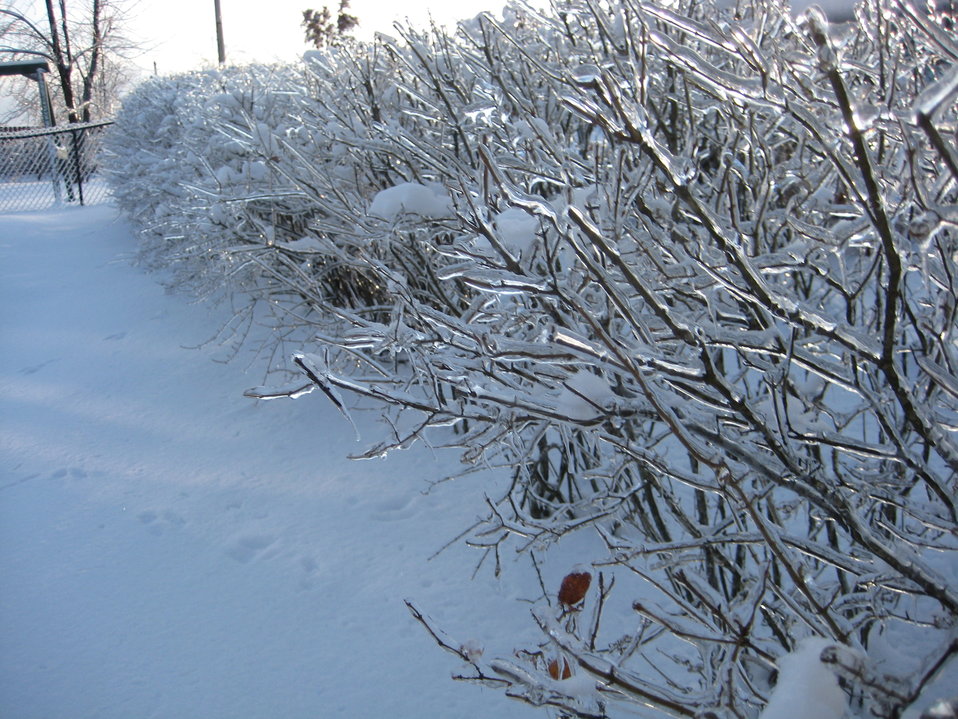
A row of bushes in Floyd County, Indiana is coated in ice from the January 2009 Midwest Ice Storm.